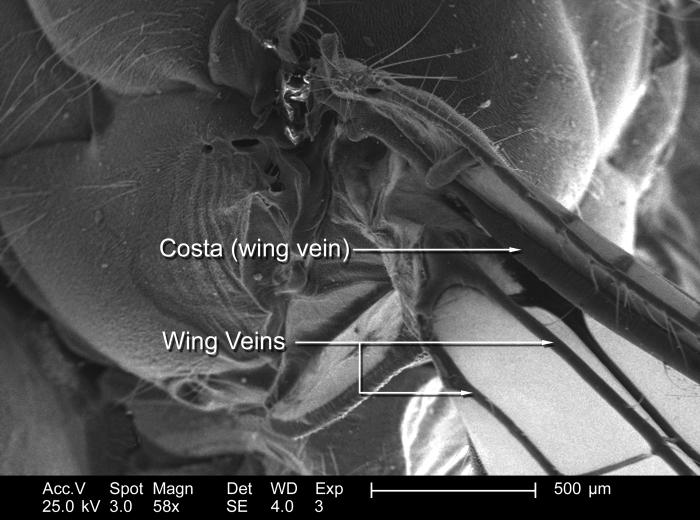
Magnified 58x, this scanning electron micrograph (SEM) depict some of the morphologic details found associated with the wing attachment of an unidentified dragonfly, found deceased on the grounds of the Decatur, Georgia suburbs.All dragonflies are divided into two main groups: the Anisoptera, or 'true' dragonflies that when in flight maintain a 'cross-like' shape with their outstretched wings, and the Zygoptera, or 'damselflies' who when in flight, position their wings above their bodies. The thorax is the body segment to which the wings are attached, and which is subdivided into the anterior 'prothorax' that attaches the head, and from which emanates the first pair of legs, and the 'pterothorax' which houses the flight muscles, attaches the wings, and two remaining pairs of legs.